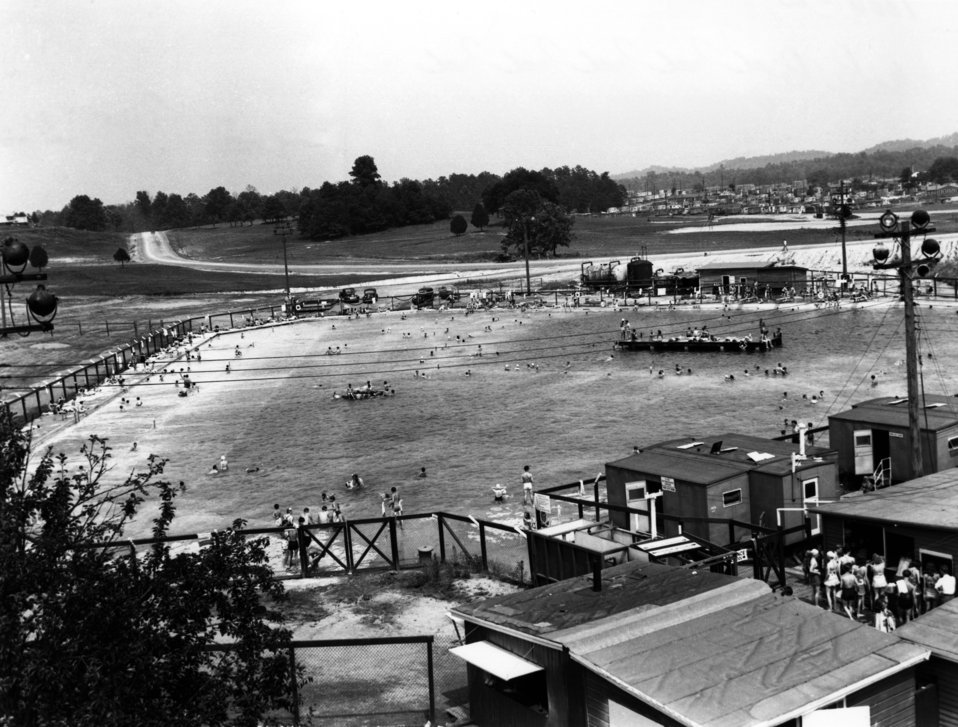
Oak Ridge Swimming Pool 1946

1880-2 DOE photo Ed Westcott 7-4-1946 Oak Ridge Tennessee